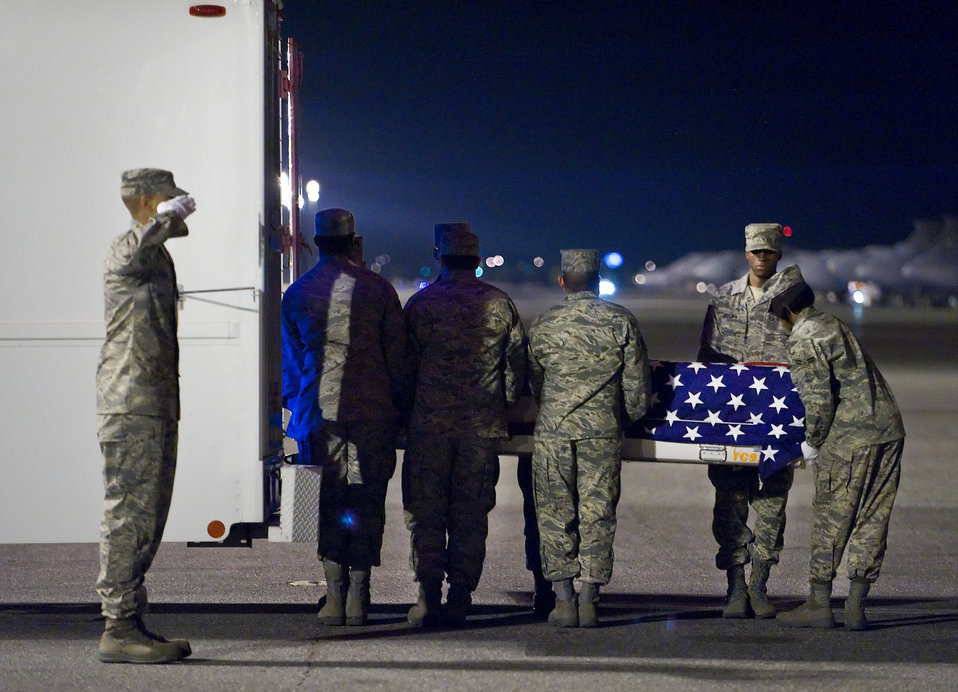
Dignified Transfer

An Air Force Mortuary Affairs Operations Center carry team transfers the remains of Air Force Staff Sgt. Phillip A. Myers, of Hopewell, Va., into a truck at Dover Air Force Base, Del., April 5. Sergeant Myers died April 4 near Helmand Province, Afghanistan, from wounds suffered from an improvised explosive device. He was assigned to the 48th Civil Engineer Squadron, Royal Air Force Lakenheath, United Kingdom. Sergeant Myers' family is the first to allow media to cover the dignified transfer under the new Department of Defense policy.